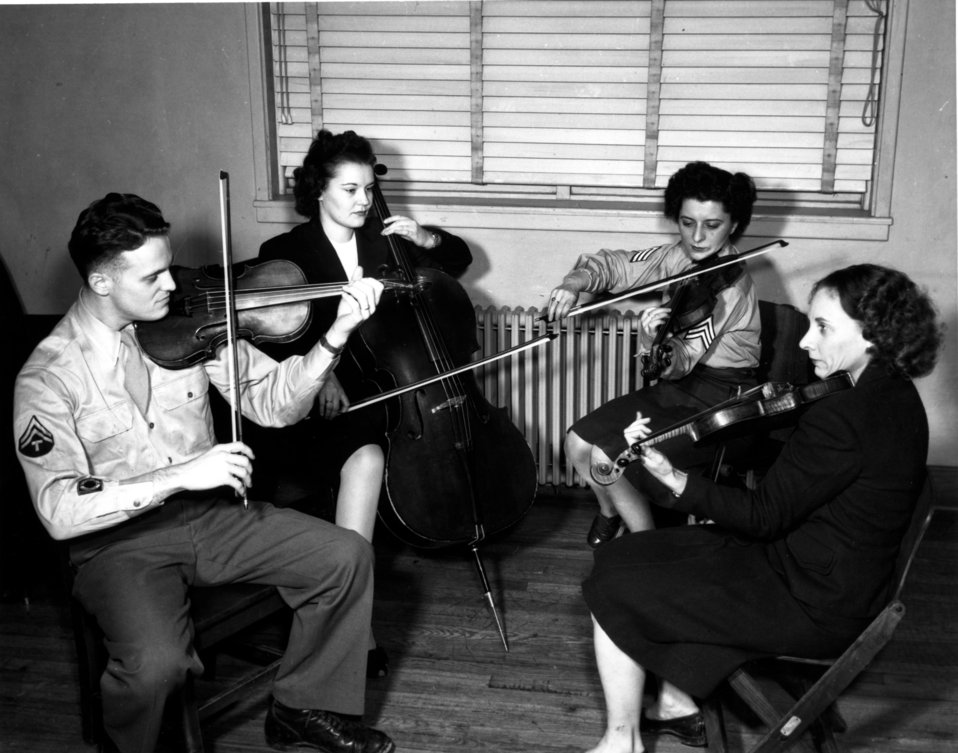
Recreation at Oak Ridge